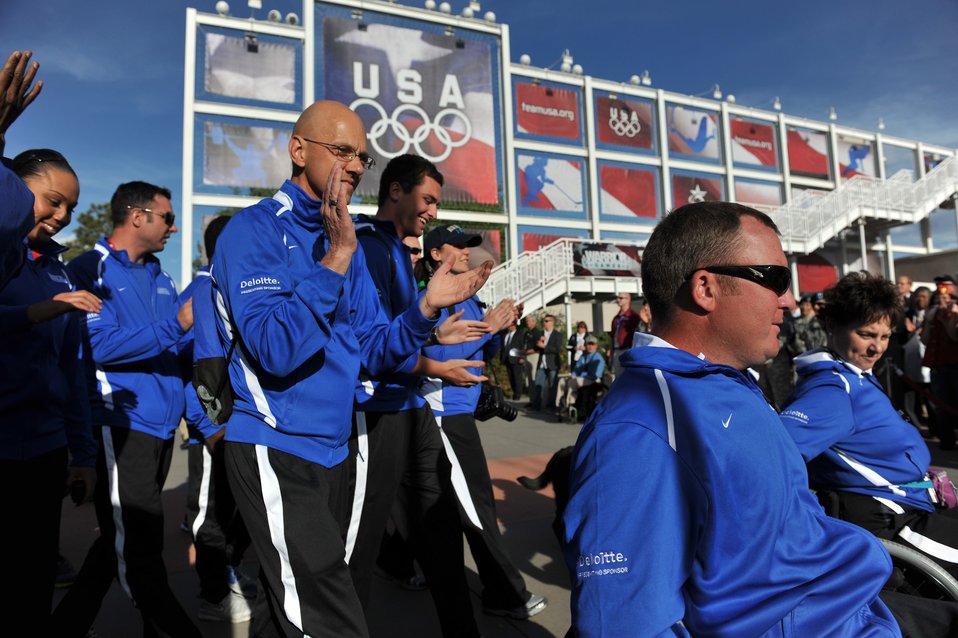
Warrior Games Opening Ceremony

Team Air Force marches down Olympic Path to a cheering crowd during the opening ceremony of the inaugural Warrior Games at the U.S. Olympic Training Center in Colorado Springs, Colo., May 10, 2010. Some 200 wounded warriors and disabled veterans from all the military services are competing in paralympic-style athletic events May 10-14.